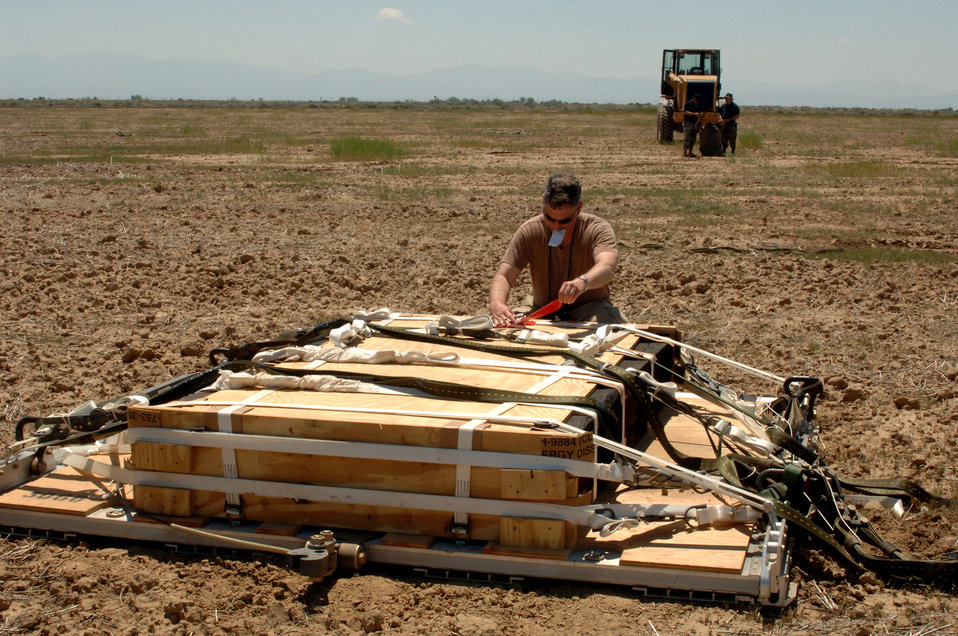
Pallet drop over California

Lt. Col. Arvin Mayberry checks the tag on a Type 5 heavy pallet that was extracted from a C-130J Hercules on Sunday, April 30, 2006. Two Airmen in the background pack the parachute which pulled the pallet from the aircraft. Guard, Reserve and active-duty aircrews from Channel Islands Air National Guard Base, Calif.; Little Rock AFB, Ark.; and Keesler AFB, Miss., participated in the mission which tested the aircraft's capability to drop this type of pallet. This was the first time the